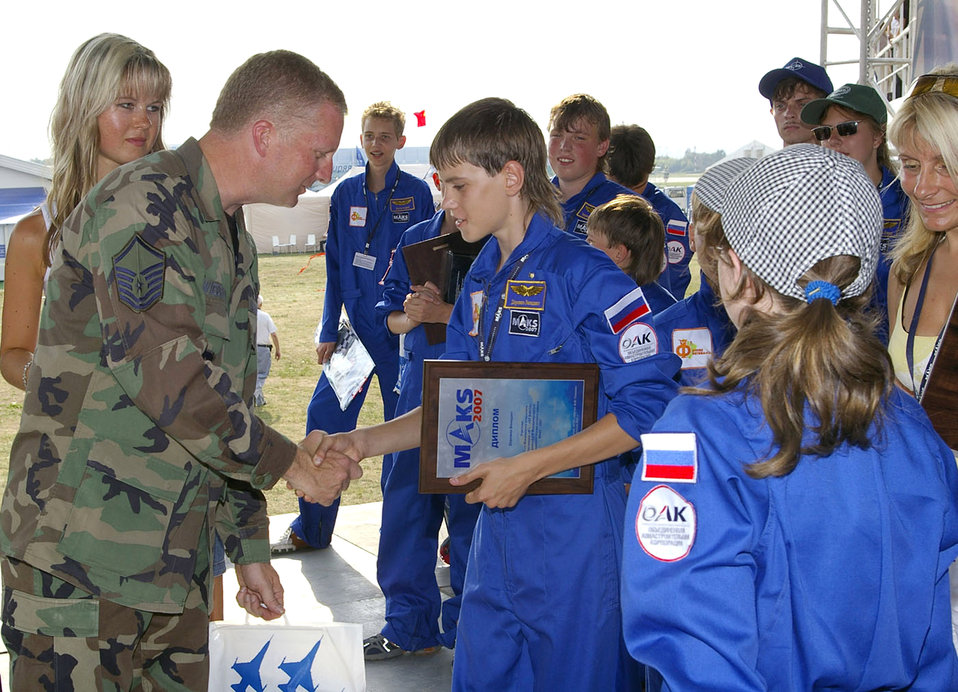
Airmen in Moscow reach out to children

With the aid of a Russian interpreter, Master Sgt. Darrell Wiedenbeck presents gifts to Moscow children Aug. 23 at the Moscow International Air Show in Zhukovsky, Russia. The children, ages 6 to 16, visited the show as part of a program called Moscow Open Festival for Children's Creativity. Approximately 60 children from nearby towns attended. Leading up to the festival, the children either made models or did artwork in four categories: Aviation, space craft, handcrafts and artwork. The top three winners in each group received prizes, and Airmen presented the children with additional aviation materials such as models of Air Force aircraft, pens, pencils and pins. The air show ran Aug. 21 to 26 and included Department of Defense participation of static displays and aerial flight demonstrations. Sergeant Wiedenbeck is assigned to Headquarters U.S. Air Forces in Europe at Ramstein Air Base, Germany.